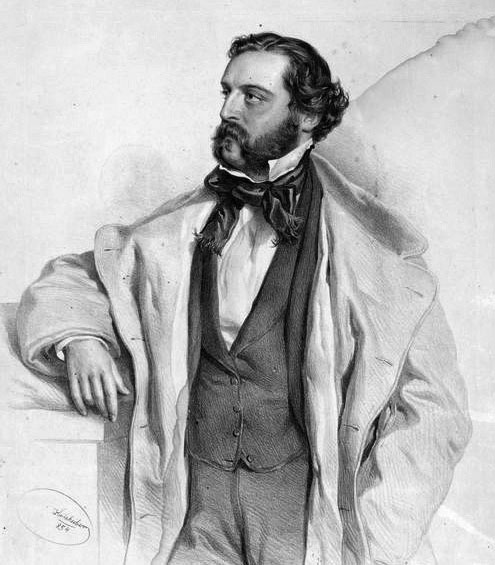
Achille De Bassini Portrait